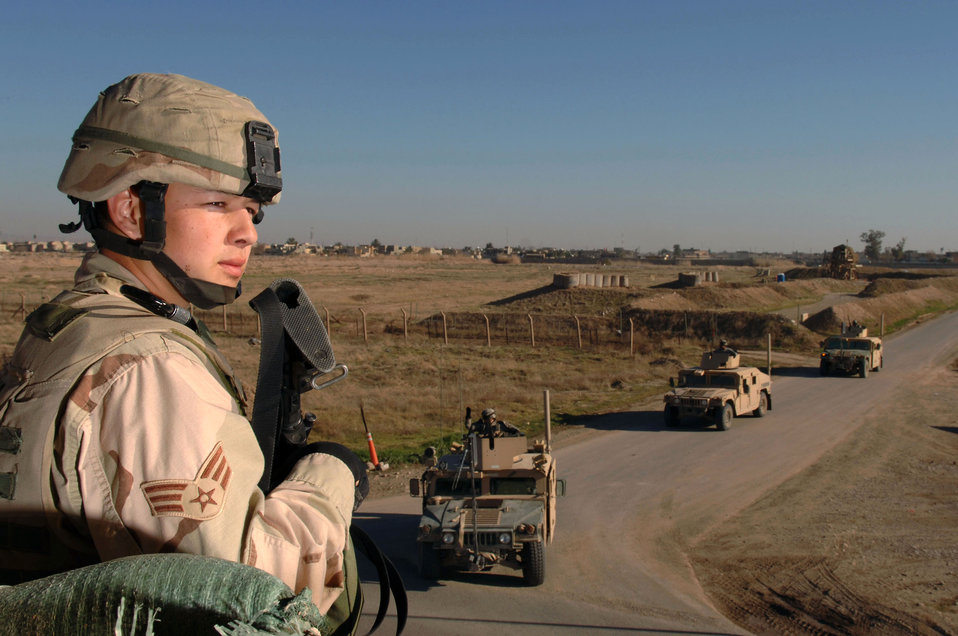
Patrol returns

Senior Airman Richard Rodriguez checks the perimeter of Kirkuk Air Base, Iraq, for insurgents Jan. 24 as an Army convoy returns from a patrol. Airman Rodriguez is a 506th Expeditionary Security Forces Squadron perimeter guard.